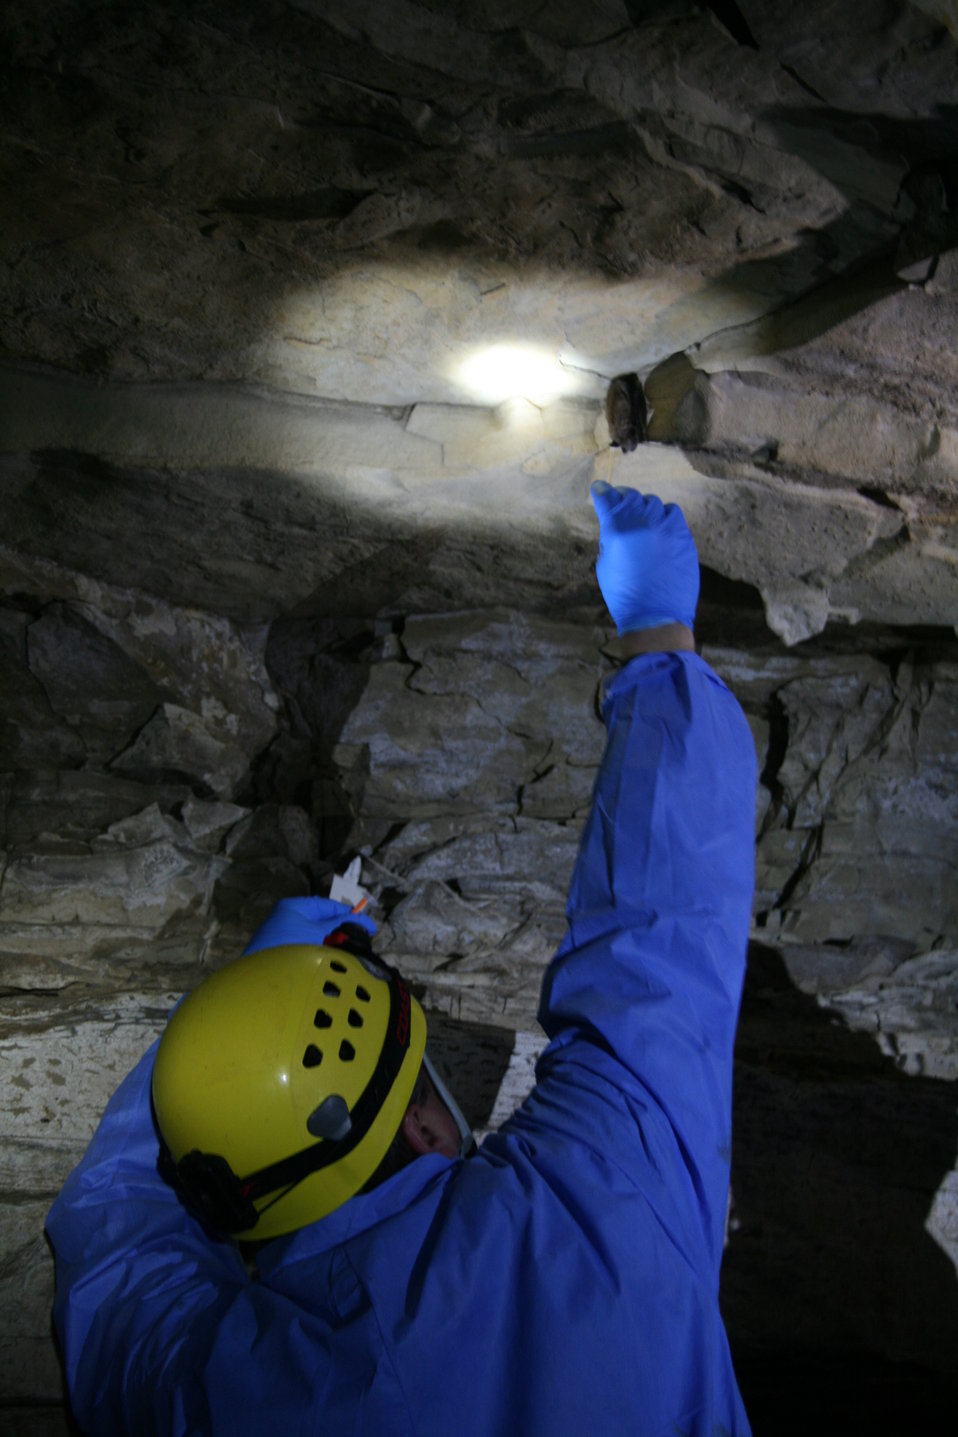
Biologist swabs bat

MDC biologist Tony Elliot swabs a healthy big brown bat for WNS research